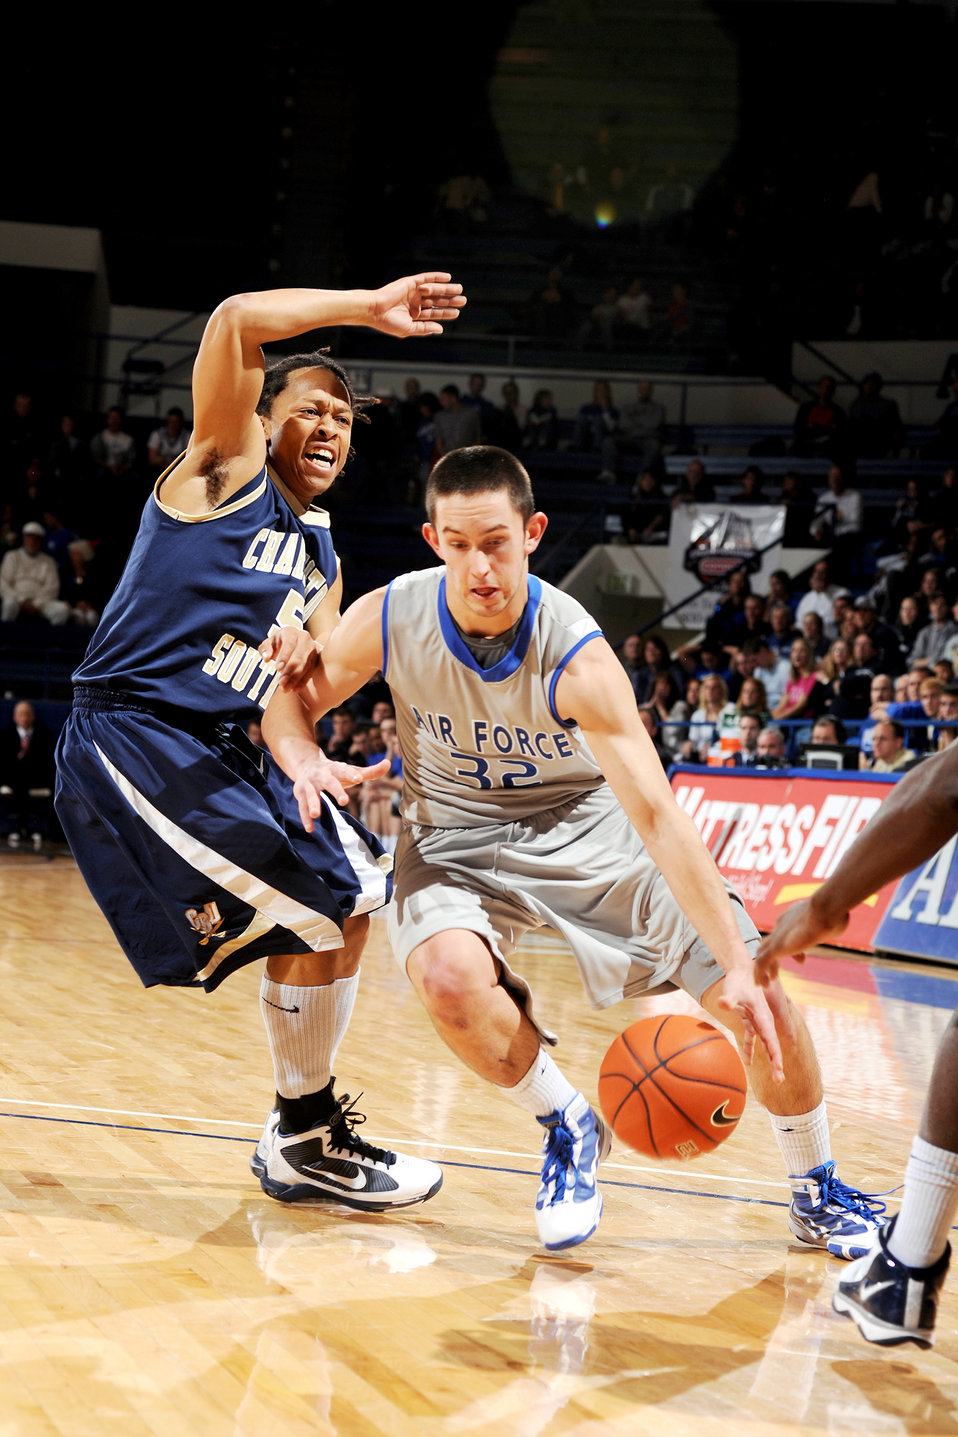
Air Force Academy

Falcons sophomore guard Shawn Hempsey drives towards the basket during Air Force?s 68-58 victory over Charleston Southern at the Air Force Academy?s Clune Arena Nov. 28, 2009. Hempsey had three points and one rebound against the Bucs.